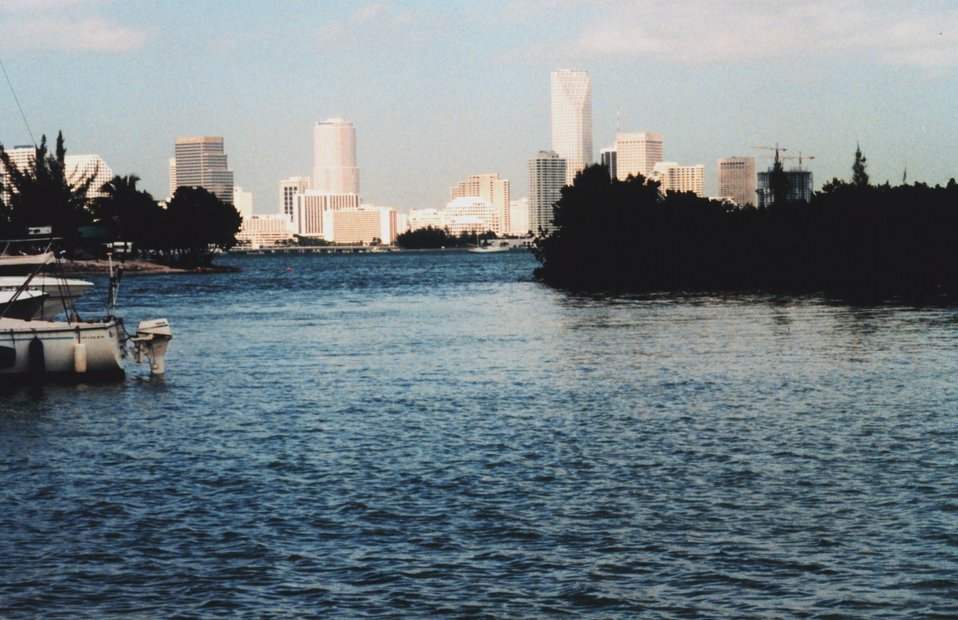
Miami skyline